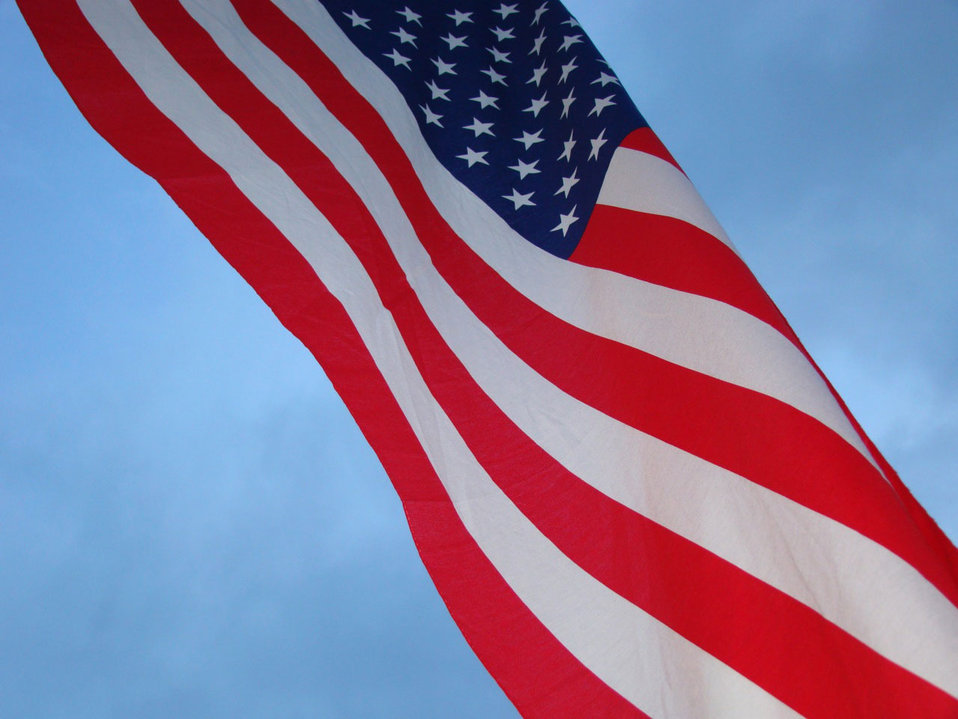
Stars and stripes

Us flag against blue sky.